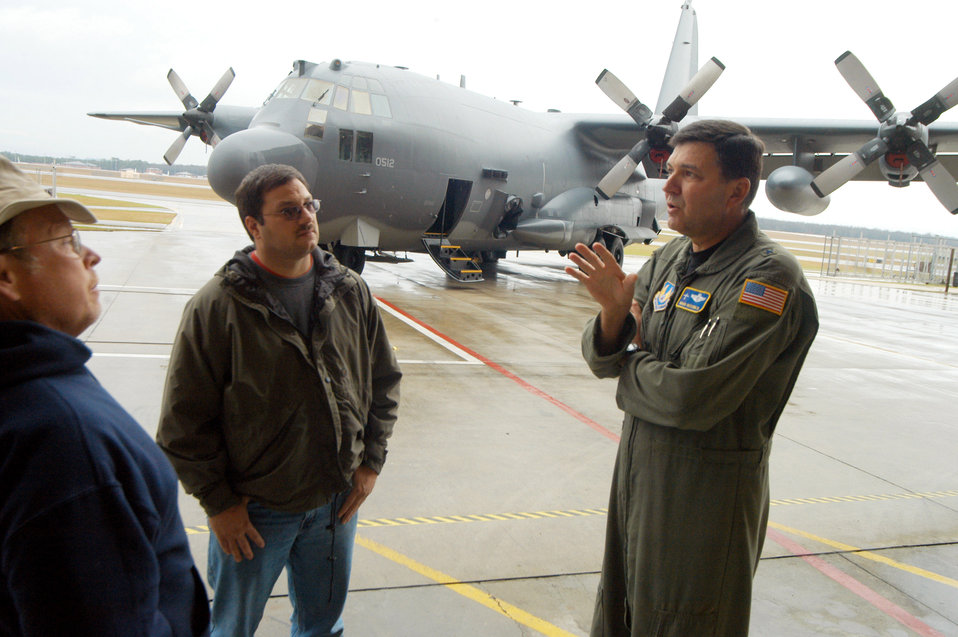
C-130 mechanics beat repair deadline for gunship

Brig. Gen. Bradley A. Heithold (right) speaks with Dan Richardson and Kevin Kelly in front of the AC-130U Gunship after a release ceremony Jan. 22 at Robins Air Force Base, Ga. Maintainers repaired the gunship in only 146 days and four days ahead of schedule.